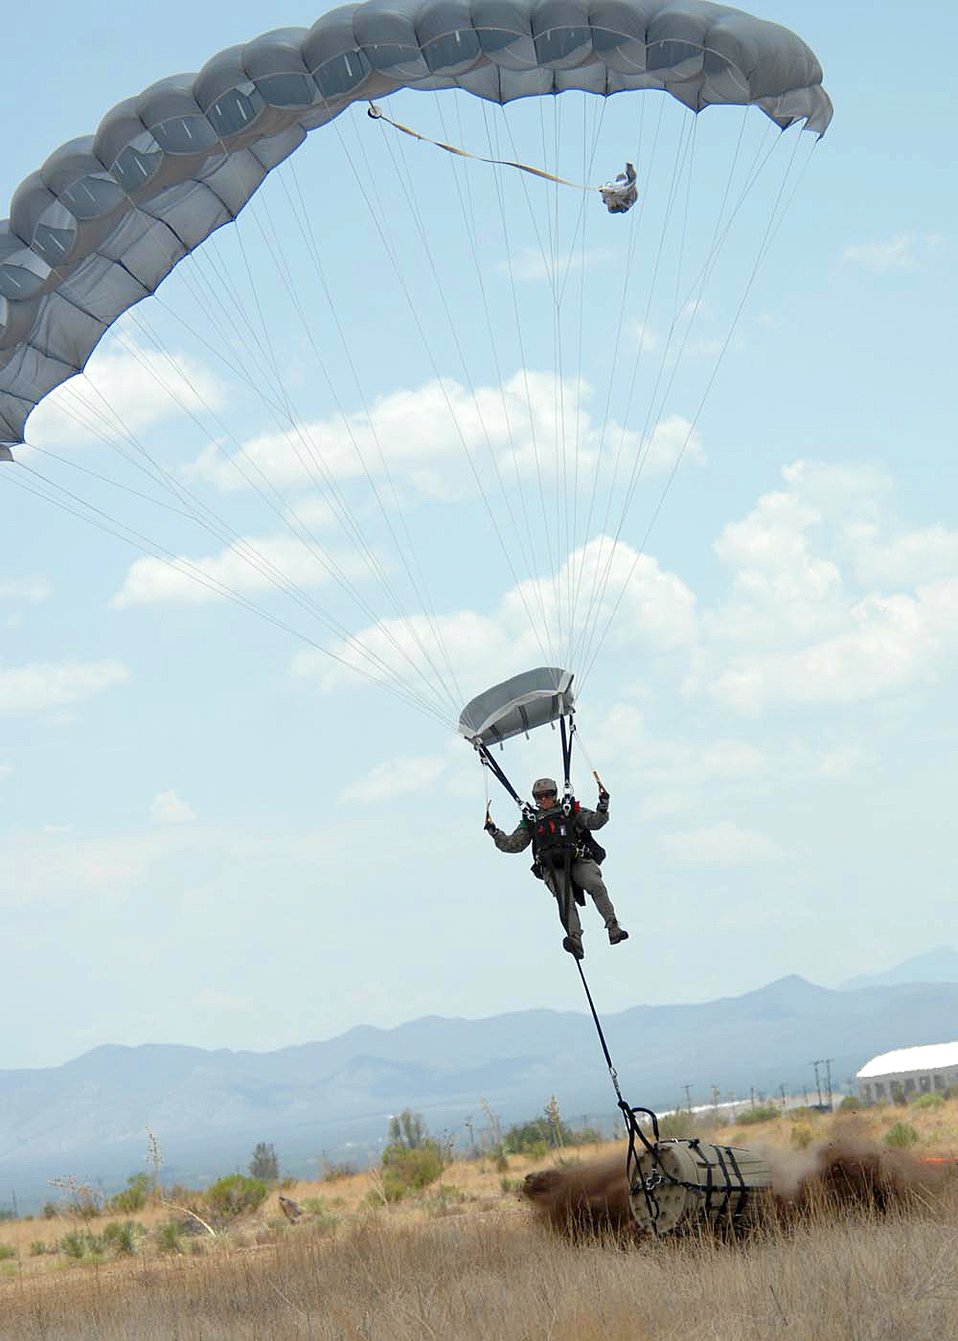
Angel Thunder

Master Sgt. Chris Tellsworth prepares to land after jumping out of a C-130 Hercules July 12 at Douglas, Ariz., as part of Exercise Angel Thunder. Angel Thunder is a joint service combat search and rescue exercise designed to provide realistic training that tests theater spin-up capabilities and examines the integration of all Air Force assets in mission planning procedures and mission execution. Sergeant Tellsworth is a pararescueman with the 306th Rescue Squadron at Davis-Monthan AFB, Ariz.